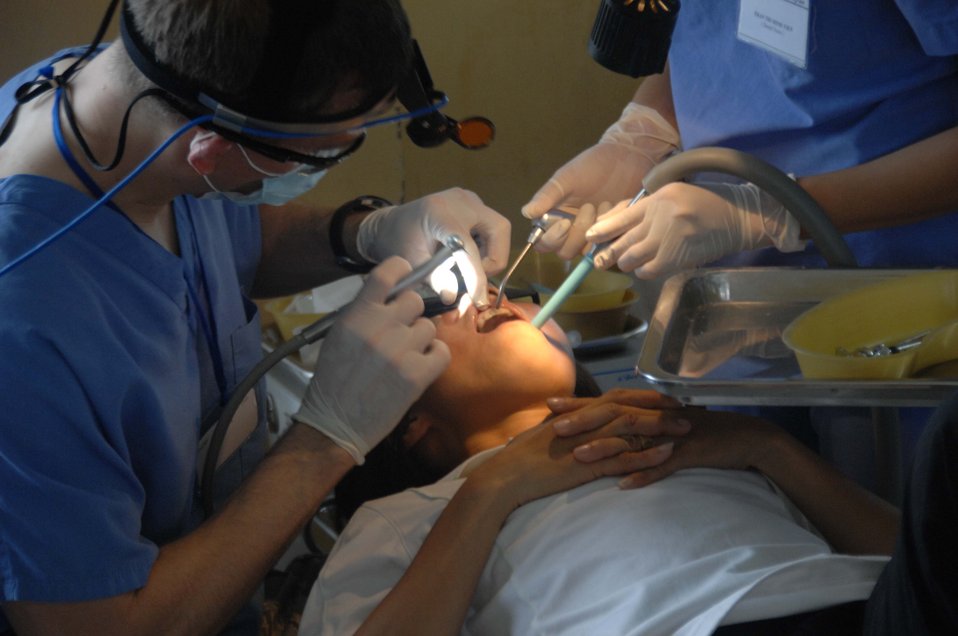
U.S., Vietnam building great relationships says U.S. Consul General

Dental work is performed on a local Vietnamese woman May 10, 2010, at the temporary medical clinic in Tan Thoi, Vietnam, as part of Pacific Angel 10-2. Nearly 100 patients were seen in the dental clinic during the opening day. Pacific Angel is a joint and combined humanitarian and civic assistance operation conducted in the Pacific in support of U.S. Pacific Command's capacity building efforts.